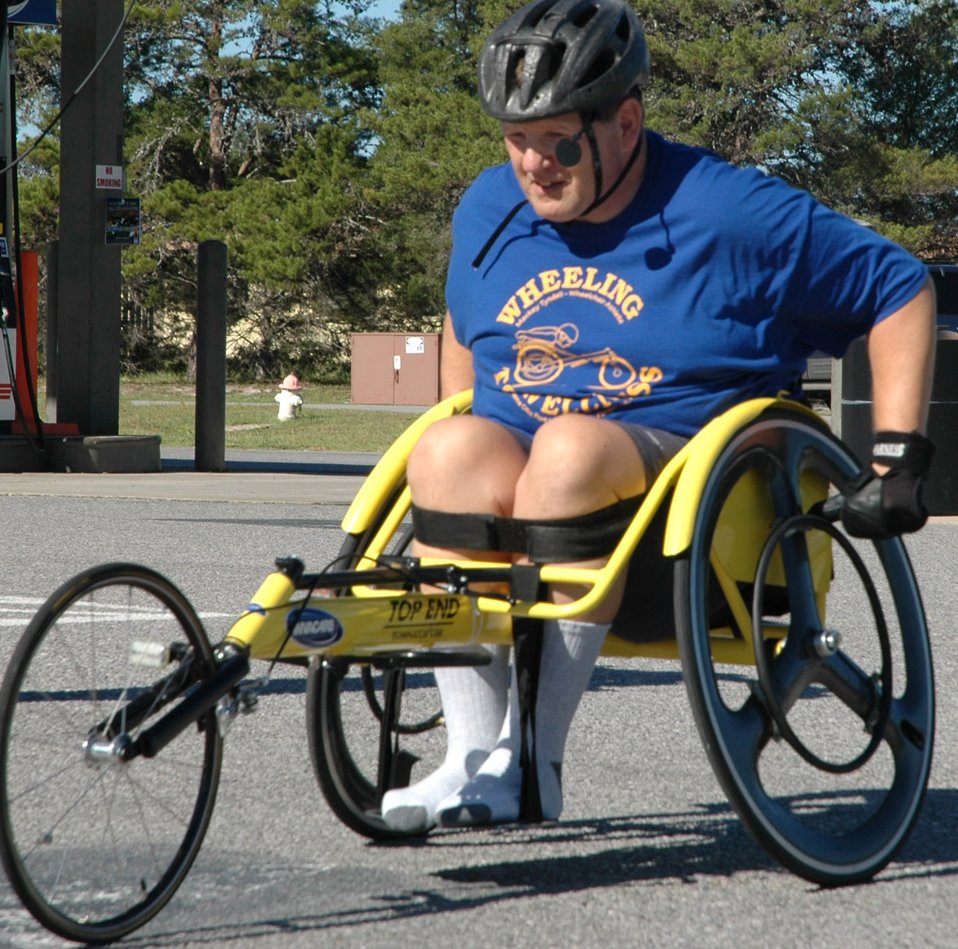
Retiree puts new spin on life

Retired Capt. Mackey Tyndall trains at Tyndall Air Force Base, Fla., Oct. 11 for two long distance races. The first event is in Richmond, Va., Oct. 21 followed by the New York City marathon two weeks later.